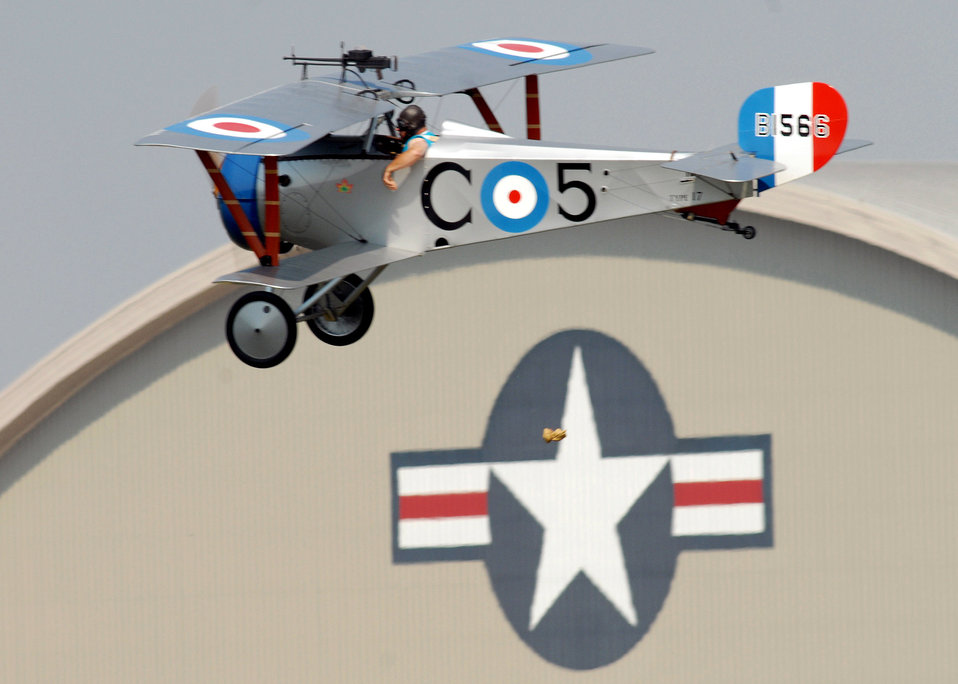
World War 1 Fly In

A pilot drops his